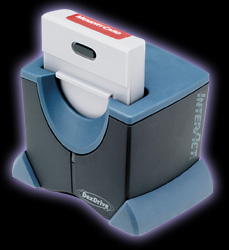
Nintendo 64 Dexdrive